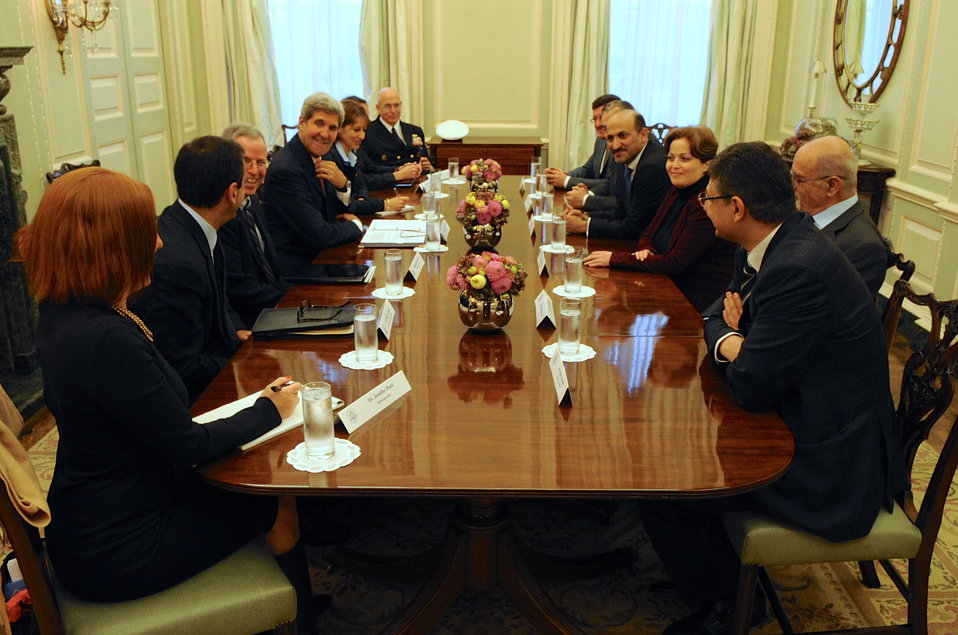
Secretary Kerry Meets With Members of the Syria Opposition Council

U.S. Secretary of State John Kerry meets with Syrian Coalition President Ahmad Jarba before a meeting with the Syrian Opposition Council at the U.S. Ambassador's residence in London, United Kingdom on October 22, 2013.